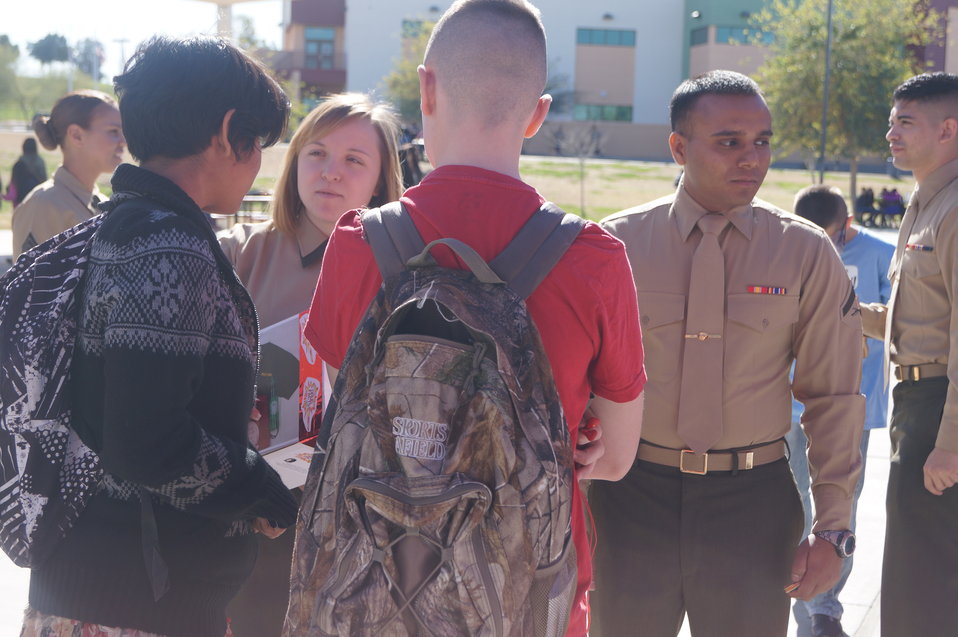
Nationa Drug Facts Week - KOFA HS

The Drug Demand Reduction Program out of Yuma Arizona held numerous events at local schools to support NIDA's National Drug Facts Week, Jan. 27-Feb. 2 2014. Teens participated in drug awareness games, and helped to Shatter the Myths about teen substance abuse.